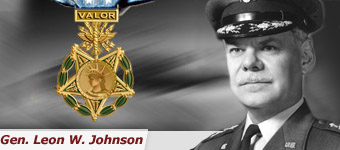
Gen. Leon W. Johnson

During Operation Tidal Wave, the most highly decorated military mission in U.S. history, Gen. Leon W. Johnson was the leader of a group B-24 Liberators that took off on an 18-hour, 2,400 mile round trip mission to destroy the largest Nazi-held oil refinery at Ploesti, 30 miles north of Bucharest, Romania. Five Airmen, including General Johnson, earned the Medal of Honor that day in 1943.